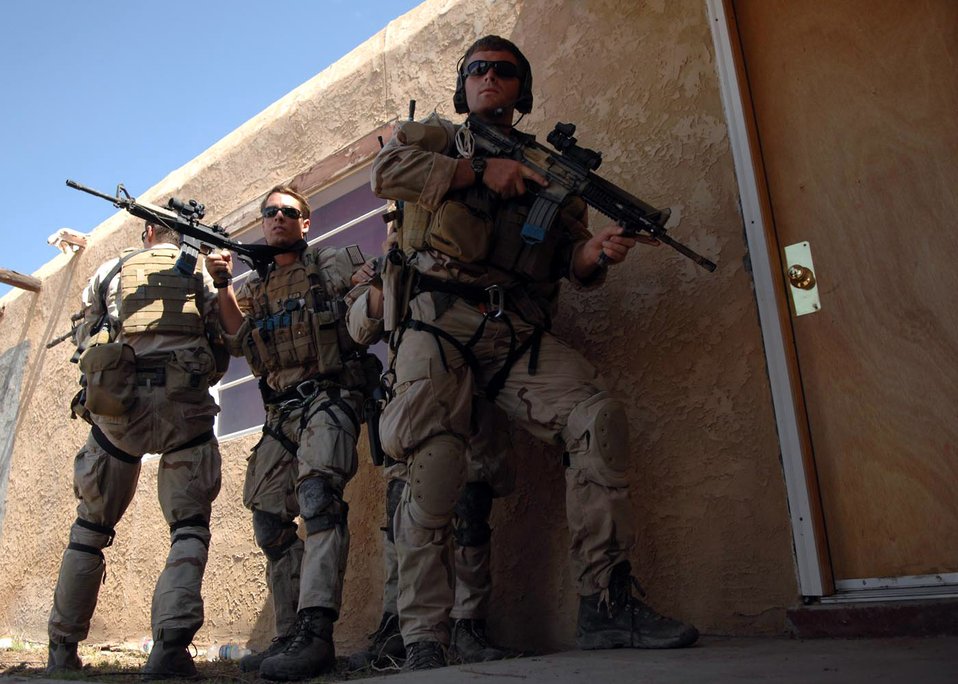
Angel Thunder 2007

Pararescuemen from the 58th Rescue Squadron at Nellis Air Force Base, Nev., prepare to enter an abandoned house during a training scenario July 13 at Playas, N.M., that is part of Exercise Angel Thunder 2007. Angel Thunder is a combat search and rescue task force exercise designed to test theater spin-up capabilities and examine the integration of all Air Force assets in mission planning procedures and mission execution.